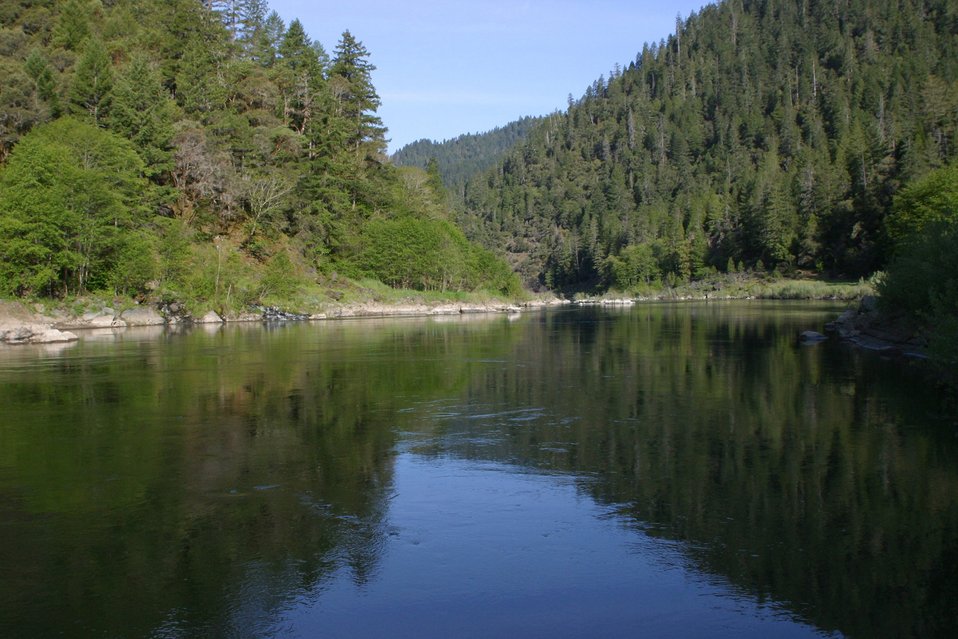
Wild section of the Rogue River from Grave Creek to Foster Bar May 19 to May 22. Whisky Creek Campground view down river.